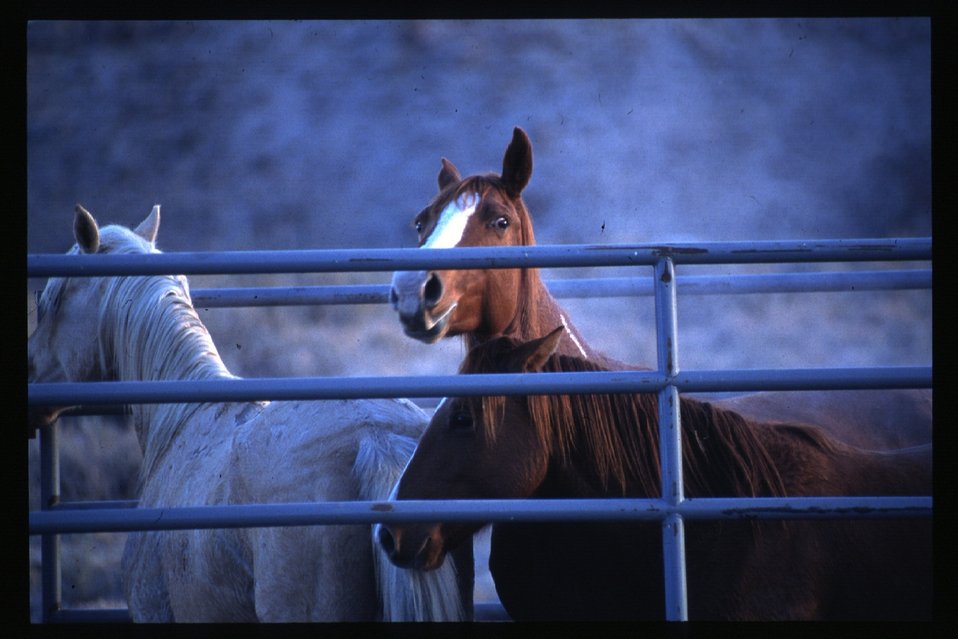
Wild horse and burro Corral roundup WHB LSRD Lower Snake River District